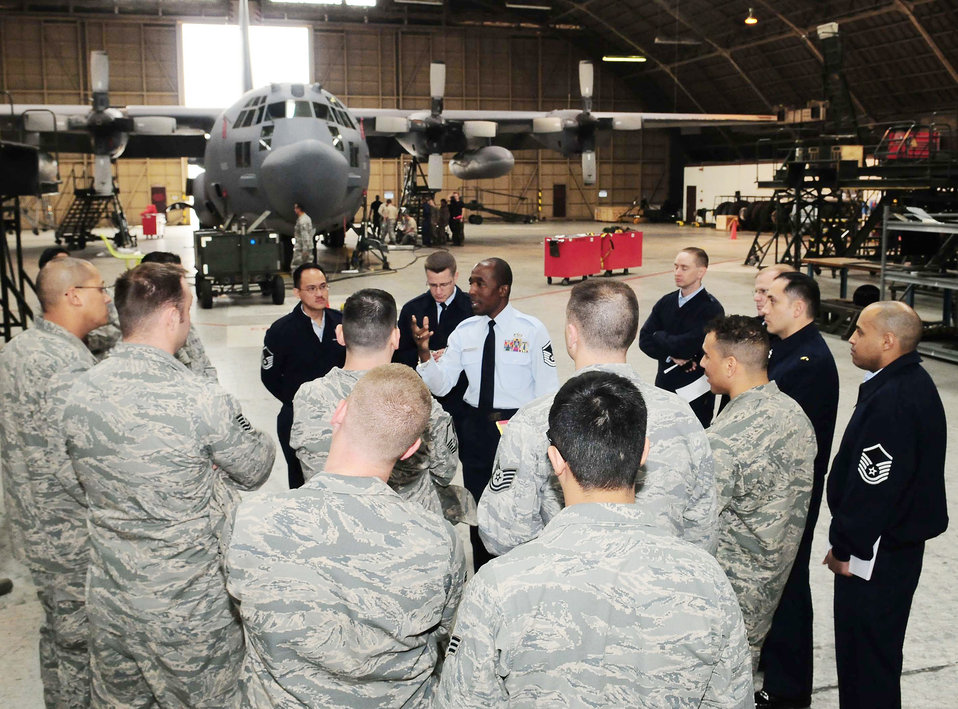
Yokota maintainers use AFSO21 to improve C-130 inspection process

Master Sgt. Melvin Stewart briefs the rapid improvement event team on procedures of the isochronal inspection March 15, 2010, at Yokota Air Base, Japan. Sergeant Stewart is assigned to the 8th Fighter Wing at Kunsan AB, South Korea.